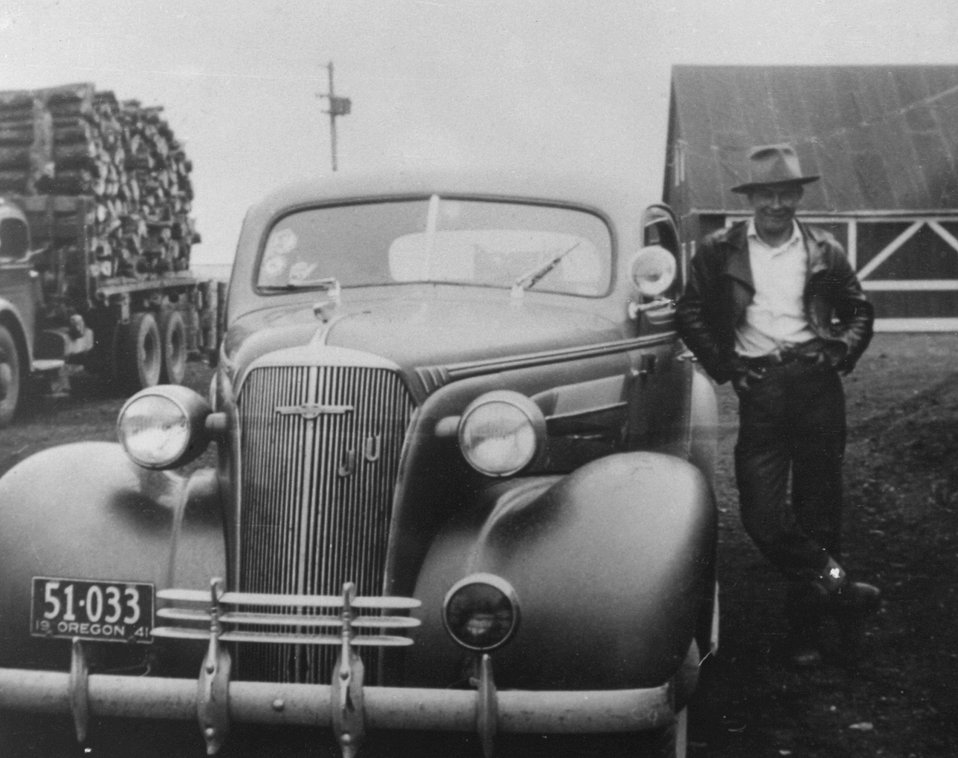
Joe Urbanek at Burns CCC Camp. New car with Joe's initials on the grill. Last day before departing for infantry duty with U.W.s Arm 1941